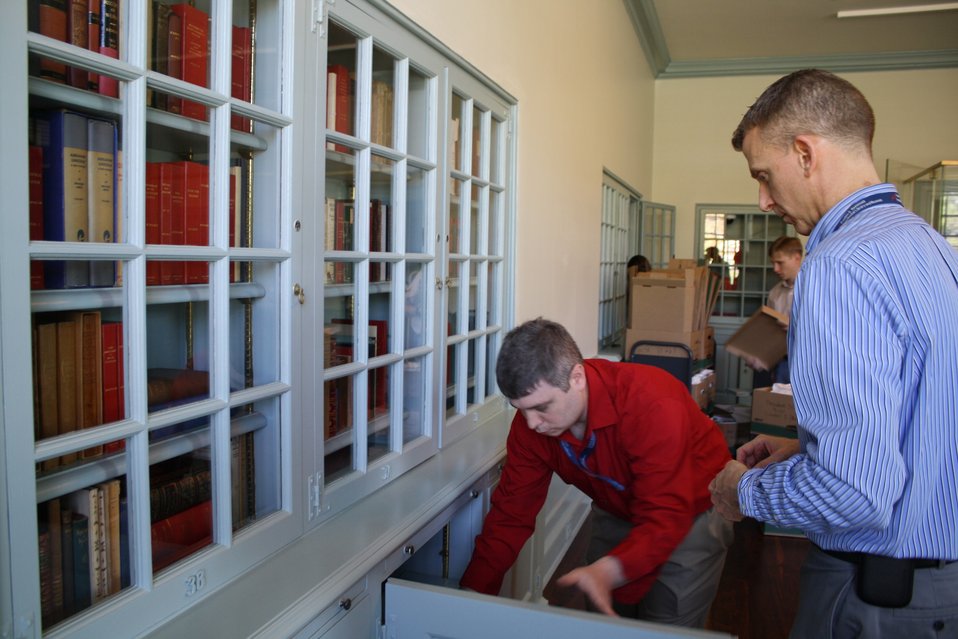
FDR Library archivists Matt Hanson and Bob Clark work on returning the President’s books to his Library study after the Library’s 3 year renovation.; Location: Franklin D. Roosevelt Presidential Library, Hyde Park, New York